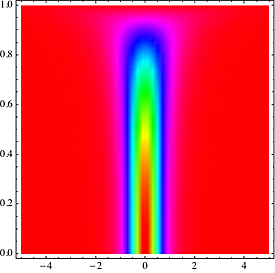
Soliton; Ultracold Gases; Quantum Wave

A conventional 'dark' soliton. The horizontal axis depicts the width of the soliton wavefronts (bounded by yellow in the left panel and purple on the right panel, with different colors representing different wave heights). The vertical axis corresponds to the speed of the soliton as a fraction of the velocity of sound. The immortal soliton on the left maintains its shape right up to the sound barrier.

Credit: I. Satija et al., JQI